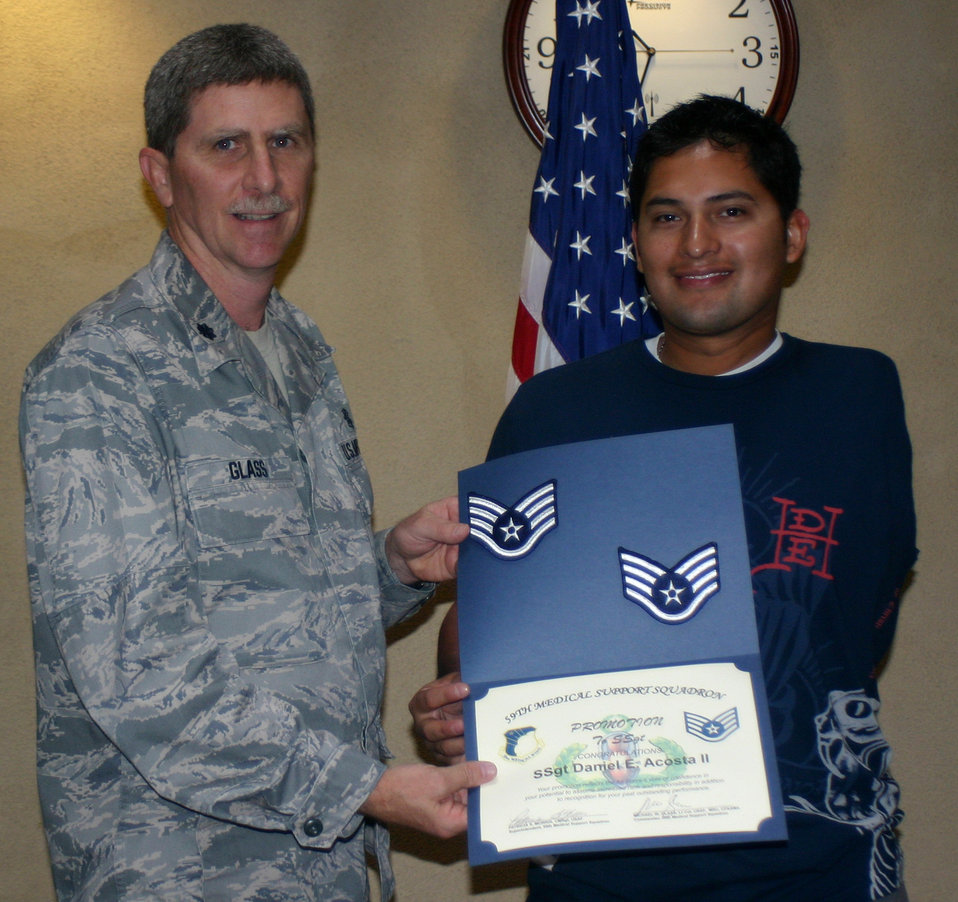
Wounded warrior receives surprise promotion

Lt. Col. Michael Glass presents a certificate of promotion May 7 to Staff Sgt. Daniel Acosta at Wilford Hall Medical Center on Lackland Air Force Base, Texas. Sergeant Acosta, an Air Force wounded warrior, received a surprise promotion to staff sergeant, effective Nov. 1, 2008. Colonel Glass is the 59th Medical Support Squadron commander.